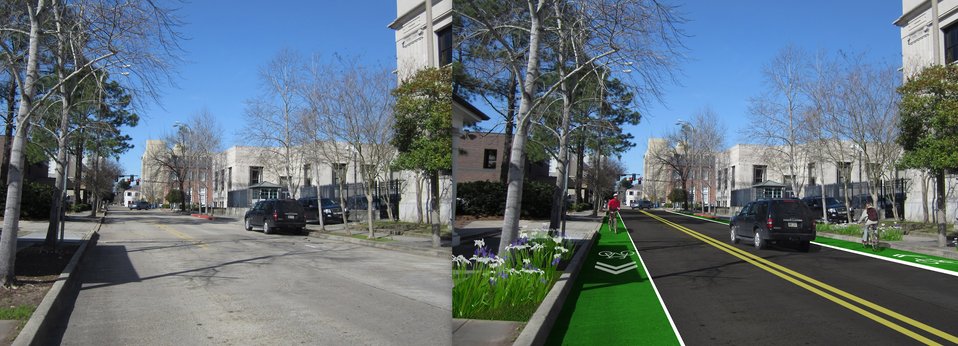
Greening America’s Capitals Before / After, Baton Rouge, LA

In addition to having one-way bike lanes on each side of North 7th Street, the proposed design for this area includes rain gardens along the sides of the road to collect, filter, and absorb runoff. Trees will also be added to better shade the sidewalk and bike lanes, and to reduce runoff.

www.epa.gov/smartgrowth/greencapitals.htm

EPA's Greening America's Capitals program helps cities include sustainable design strategies --such as green infrastructure -- in their planning and development. These concepts lead to distinctive neighborhoods that enjoy multiple social, economic, and environmental benefits. Cities are selected through a competitive application process, and many have begun to implement these enhancements with private, as well as local, state, and other federal, investments.

December 3, 2013